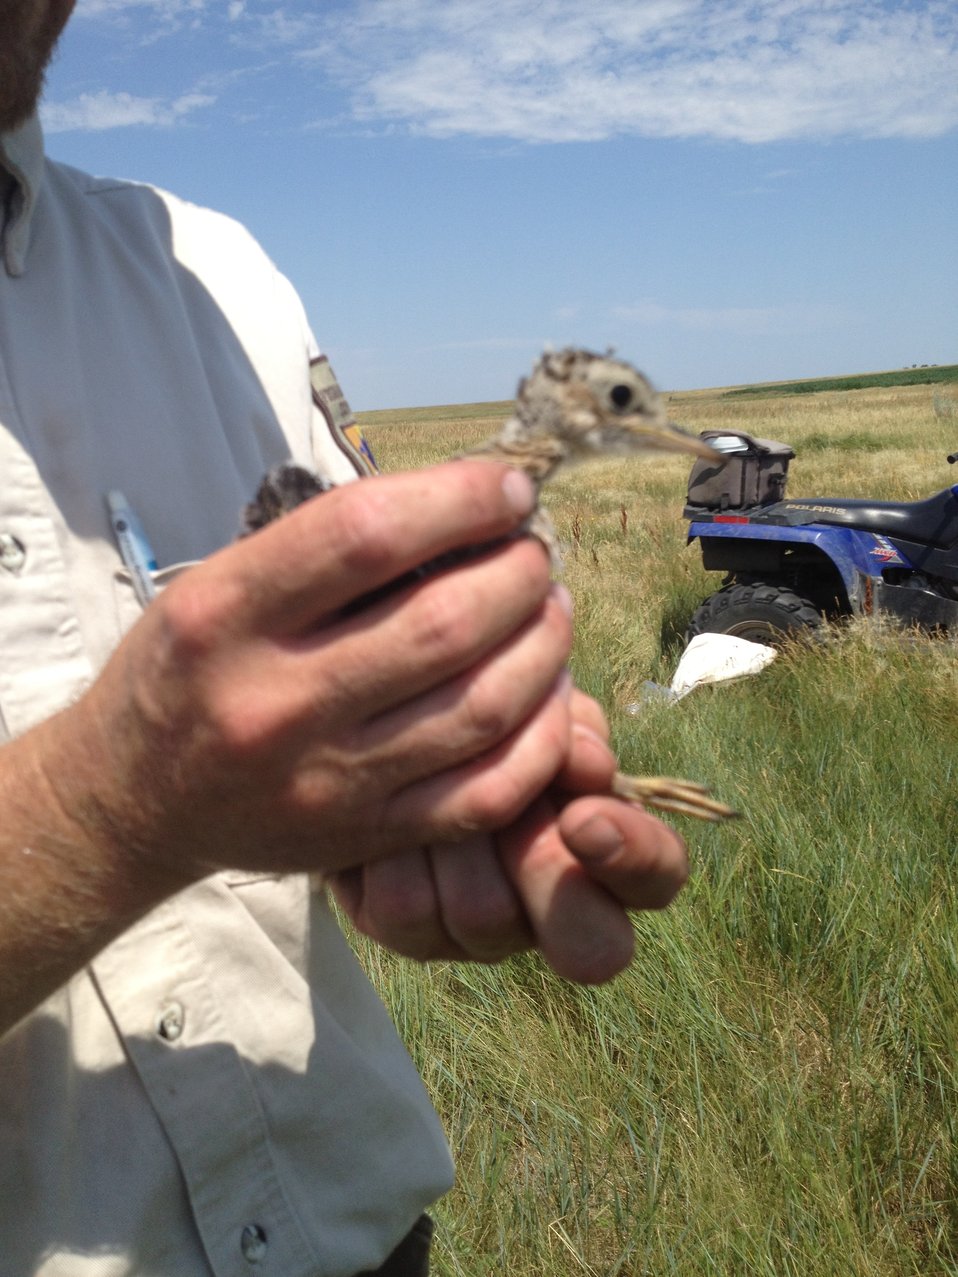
WPA WILDLIFE

Biologist holding a baby Upland Sandpiper he encountered in the field.